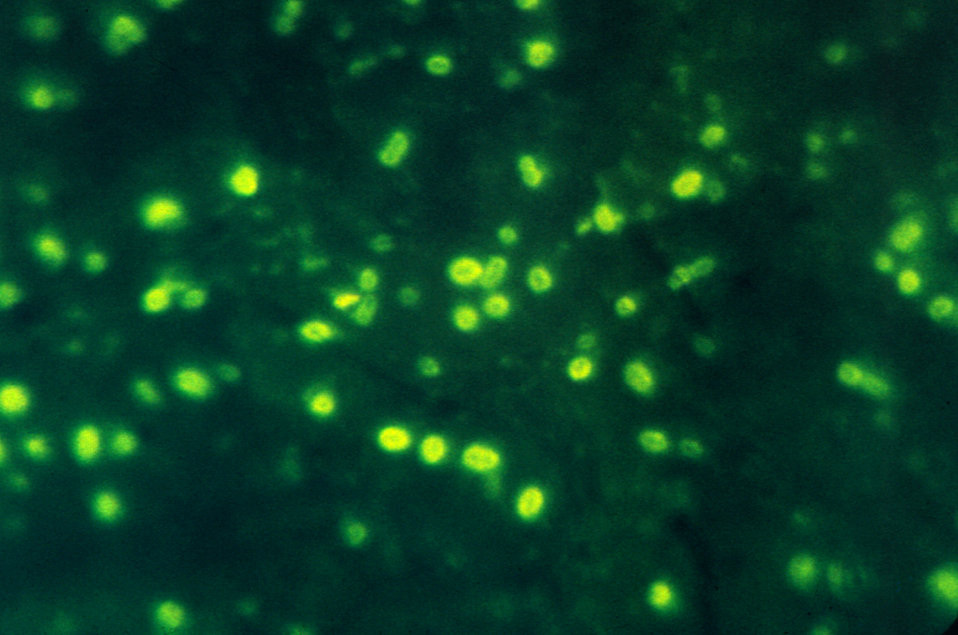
Photomicrograph of Haemophilus influenzae using immunofluorescence.